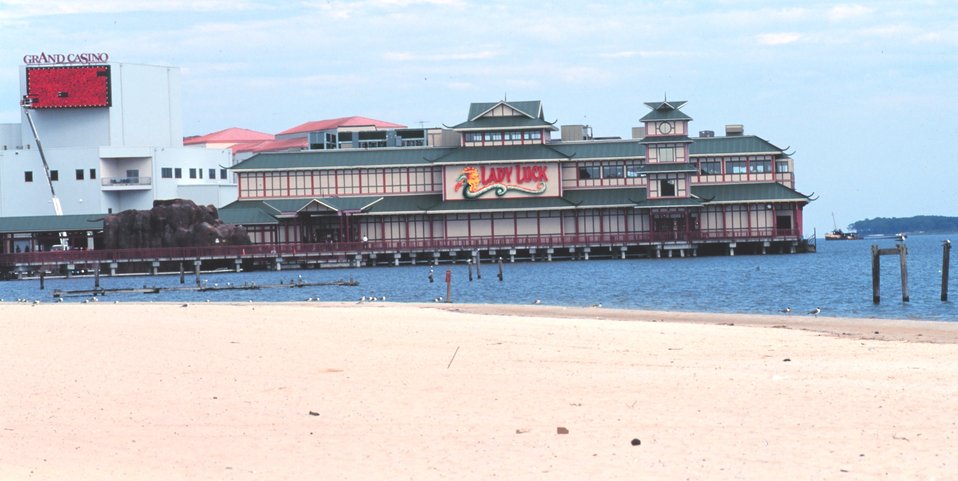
Gambling casinos have been built along the beach at Biloxi